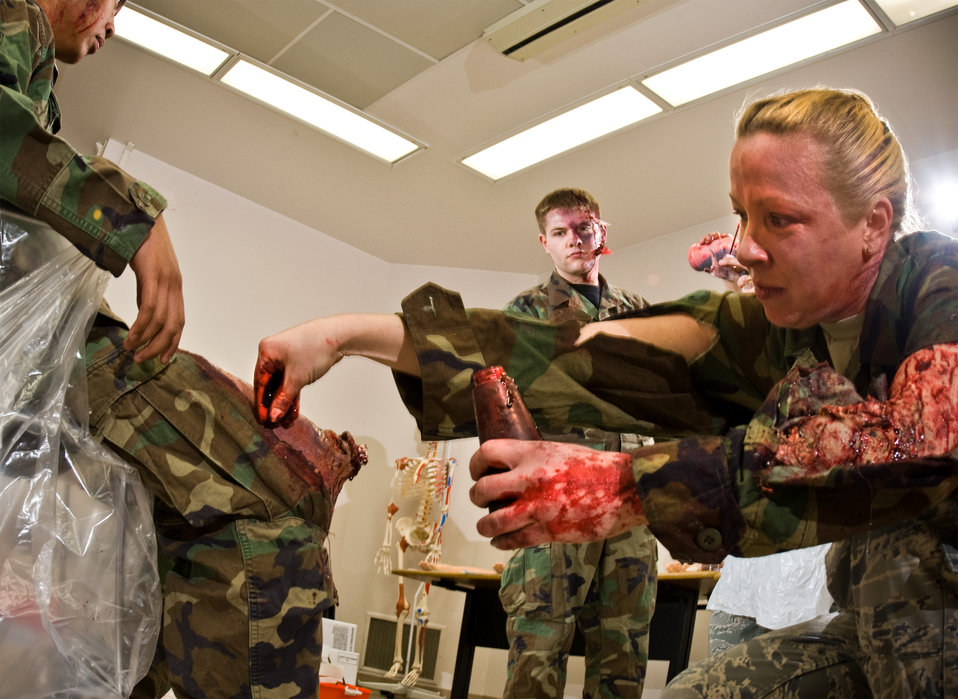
Must have More Blood

Tech. Sgt. Tricia Carnes (right, with simulated burn injuries), applies fake blood to Staff Sgt. Nomer Evangelista's simulated compound fracture during a proficiency training session on Mar. 23, 2010 at Ellsworth Air Force Base, S.D. Sergeants Carnes and Evangelista are the 28th Medical Support Squadron's NCOICs Medical Readiness and Pharmacy Automation. In the background, Airman 1st Class Rich Morgan, a Patient Travel Manager, with simulated shrapnel and blast injuries observes the moulage work.